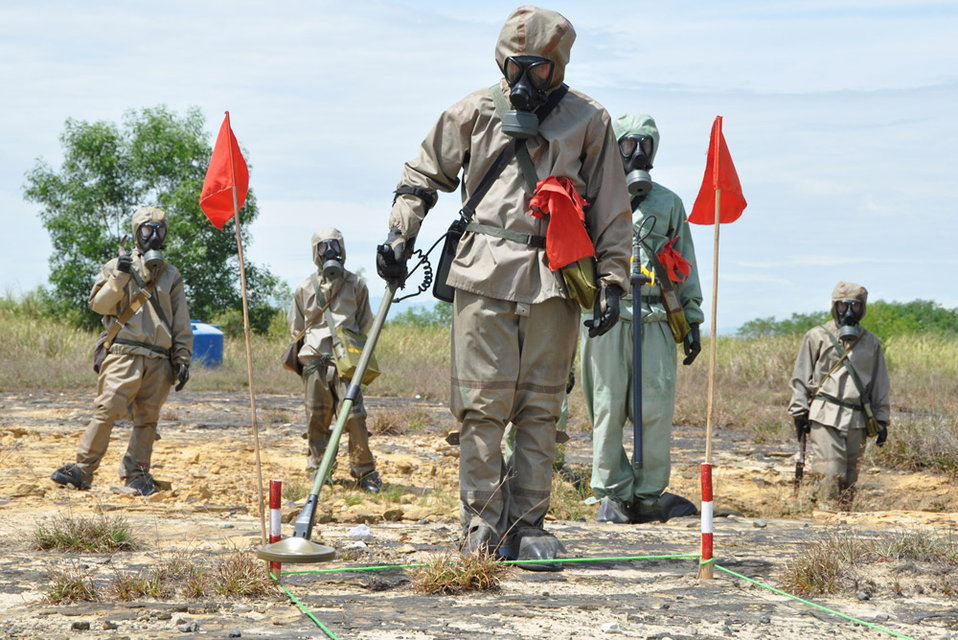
A Vietnamese soldier demonstrates UXO detection and clearance in Danang. June 17, 2011